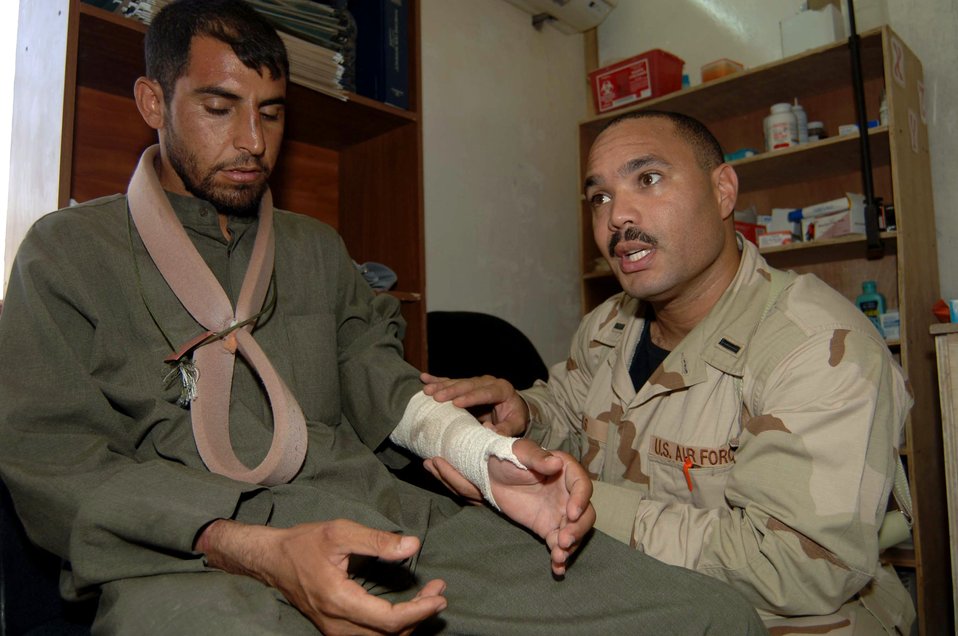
Medics lend a helping hand

1st Lt. Robert Cooks speaks to an Arabic/English translator about an Iraqi patient's broken arm June 21 at Camp Striker, Iraq. Lieutenant Cooks is a 447th Expeditionary Medical Squadron medic and volunteers his free time to assist the Army at the Civil-Military Operations Center medical clinic here. The clinic provides free medical service to impoverished Iraqi citizens.